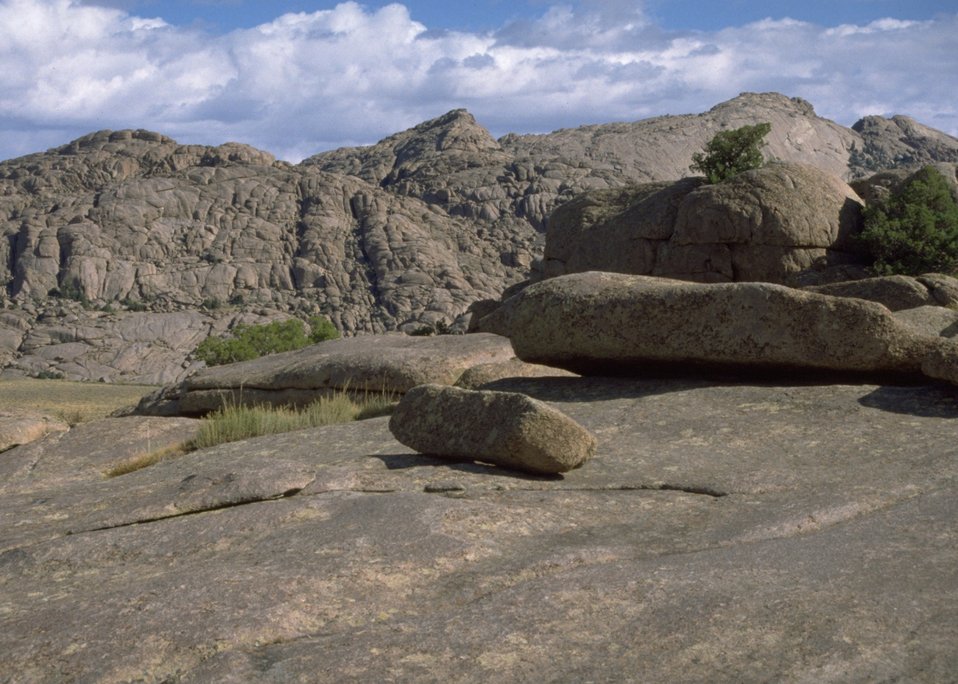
Scenic rock site.